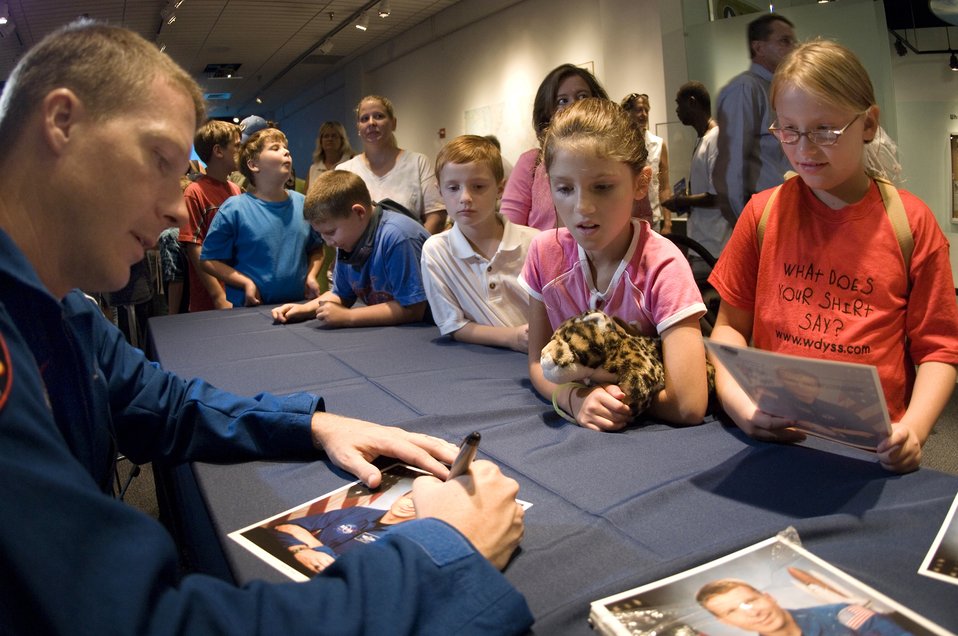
Focus on flight

Lt. Col. Terry Virts Jr., a NASA astronaut, signs pictures at the St. Louis Science Center on Aug. 9. Colonel Virts spoke to children about the Air Force and his career as an astronaut. The event was one of several activities taking place in the greater St. Louis area celebrating Air Force Week.